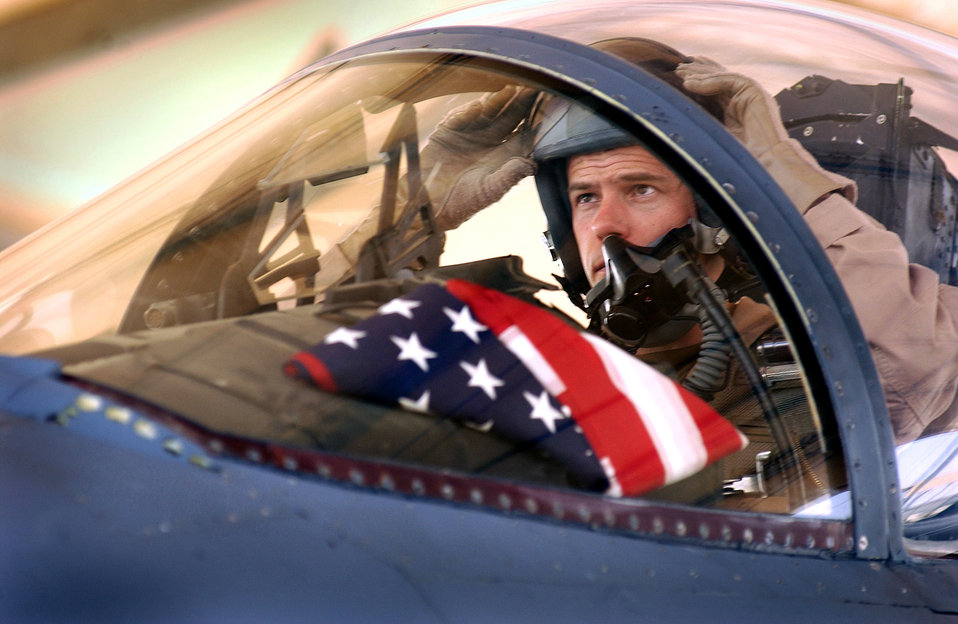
Happy 4th of July

SOUTHWEST ASIA -- Pilots deployed fighting the war on terrorism take American flags on missions for friends and family.